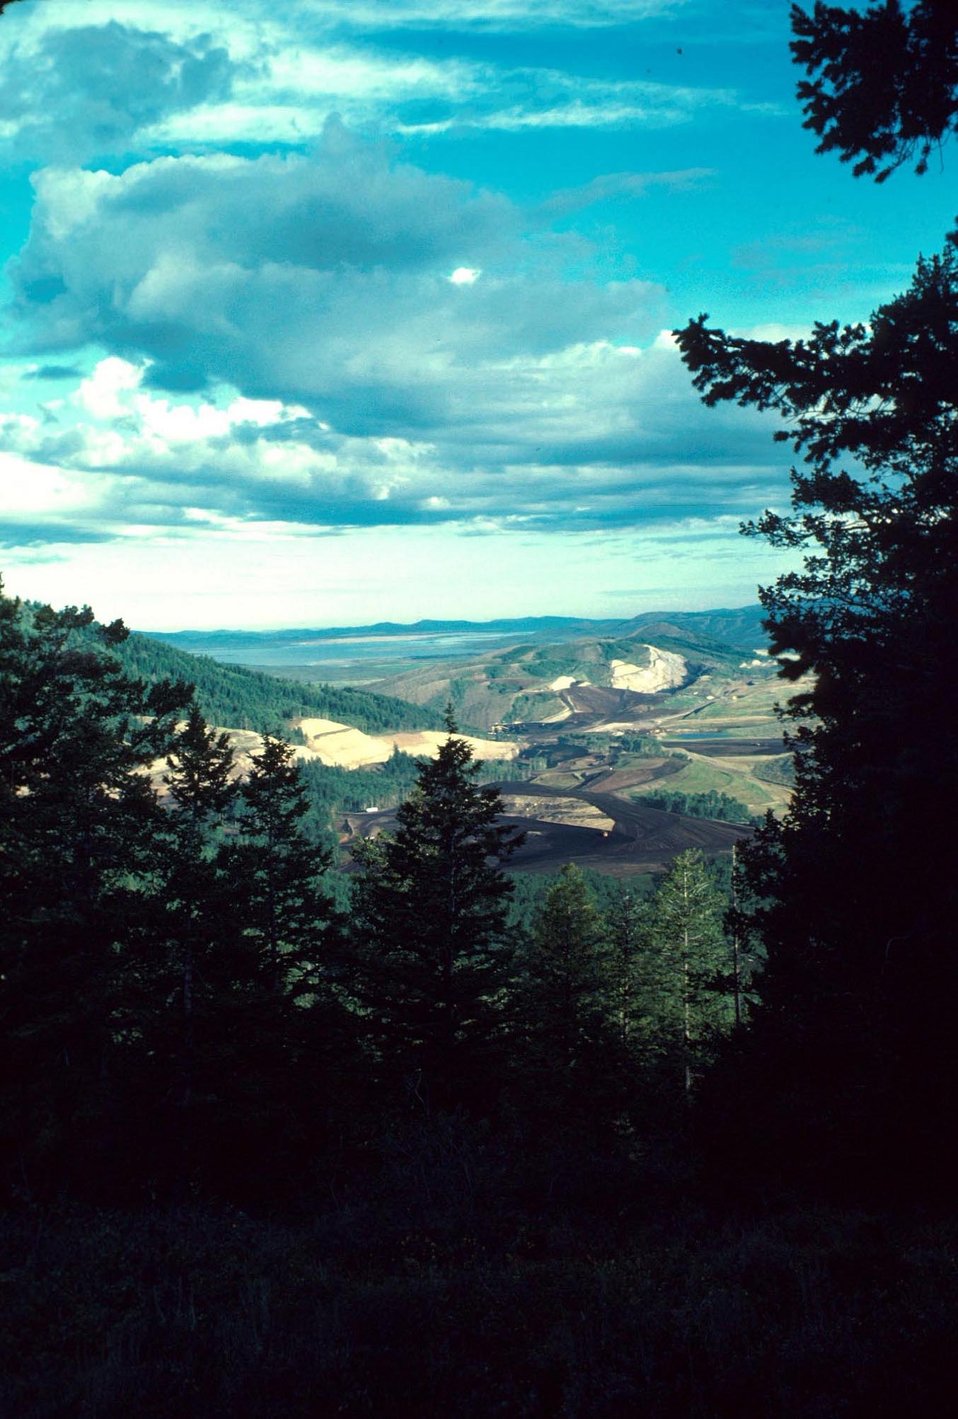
Monsanto Company South Henry Mine Pocatello Field Office USRD Upper Snake River District